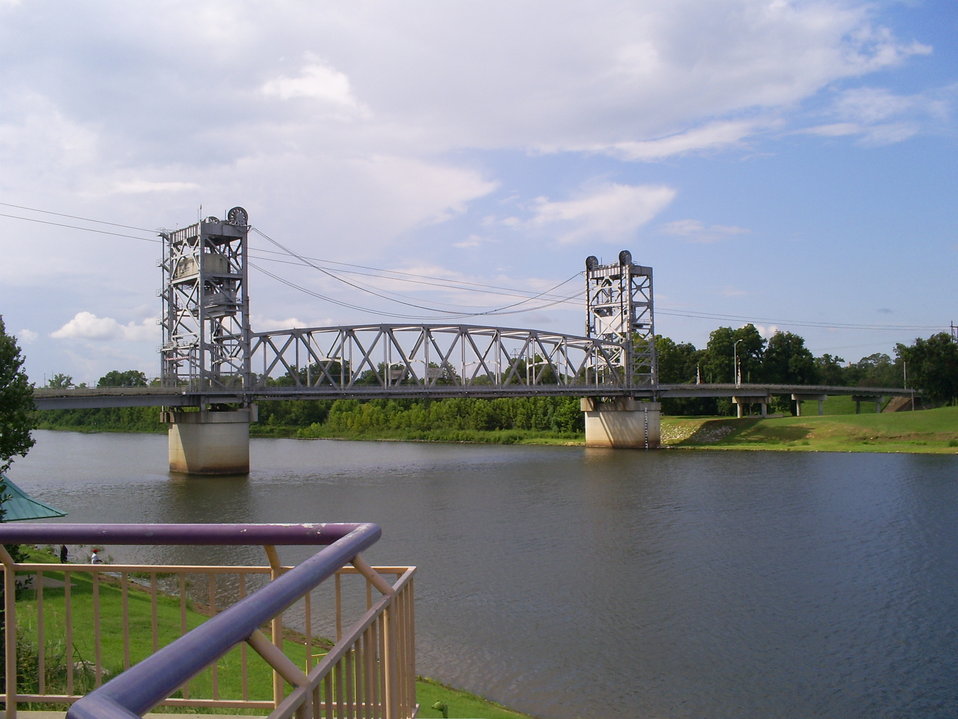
Jackson St. Bridge, Alexandria, Louisiana